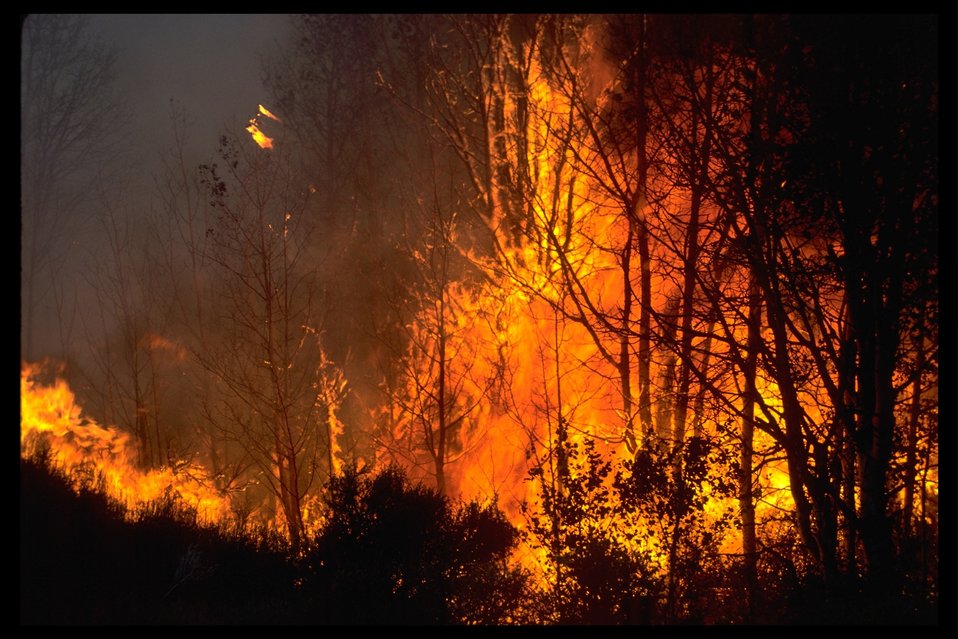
120 acre sage fire caused by hunters in the Pueblo Mountain WSA, aspen burning. (WSA 2-81)